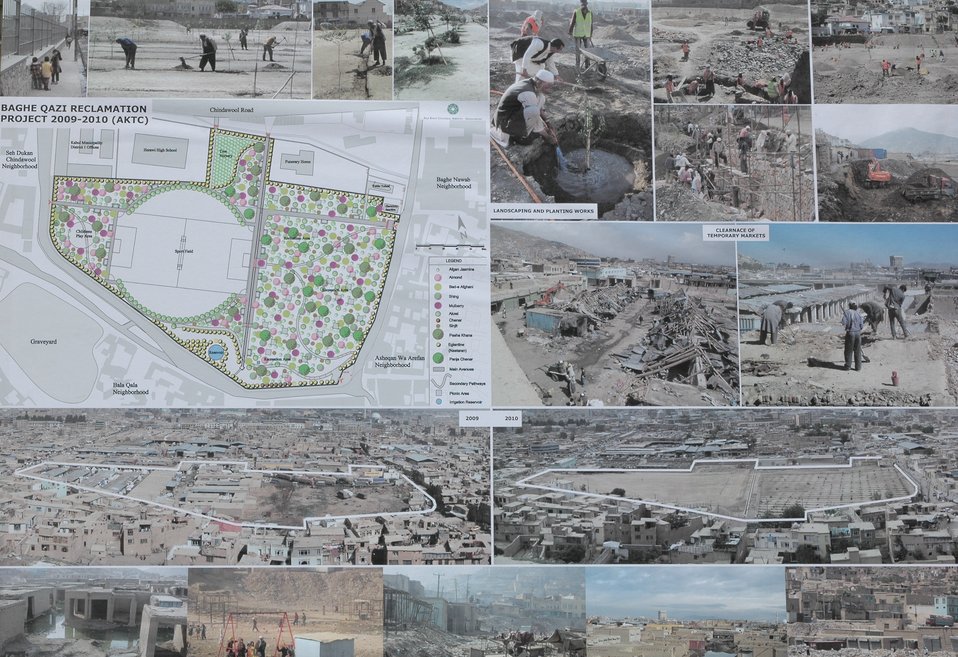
د باغ قاضی تاریخی بڼ د کابل په زوړ ښار کی بیا رغول کیږی